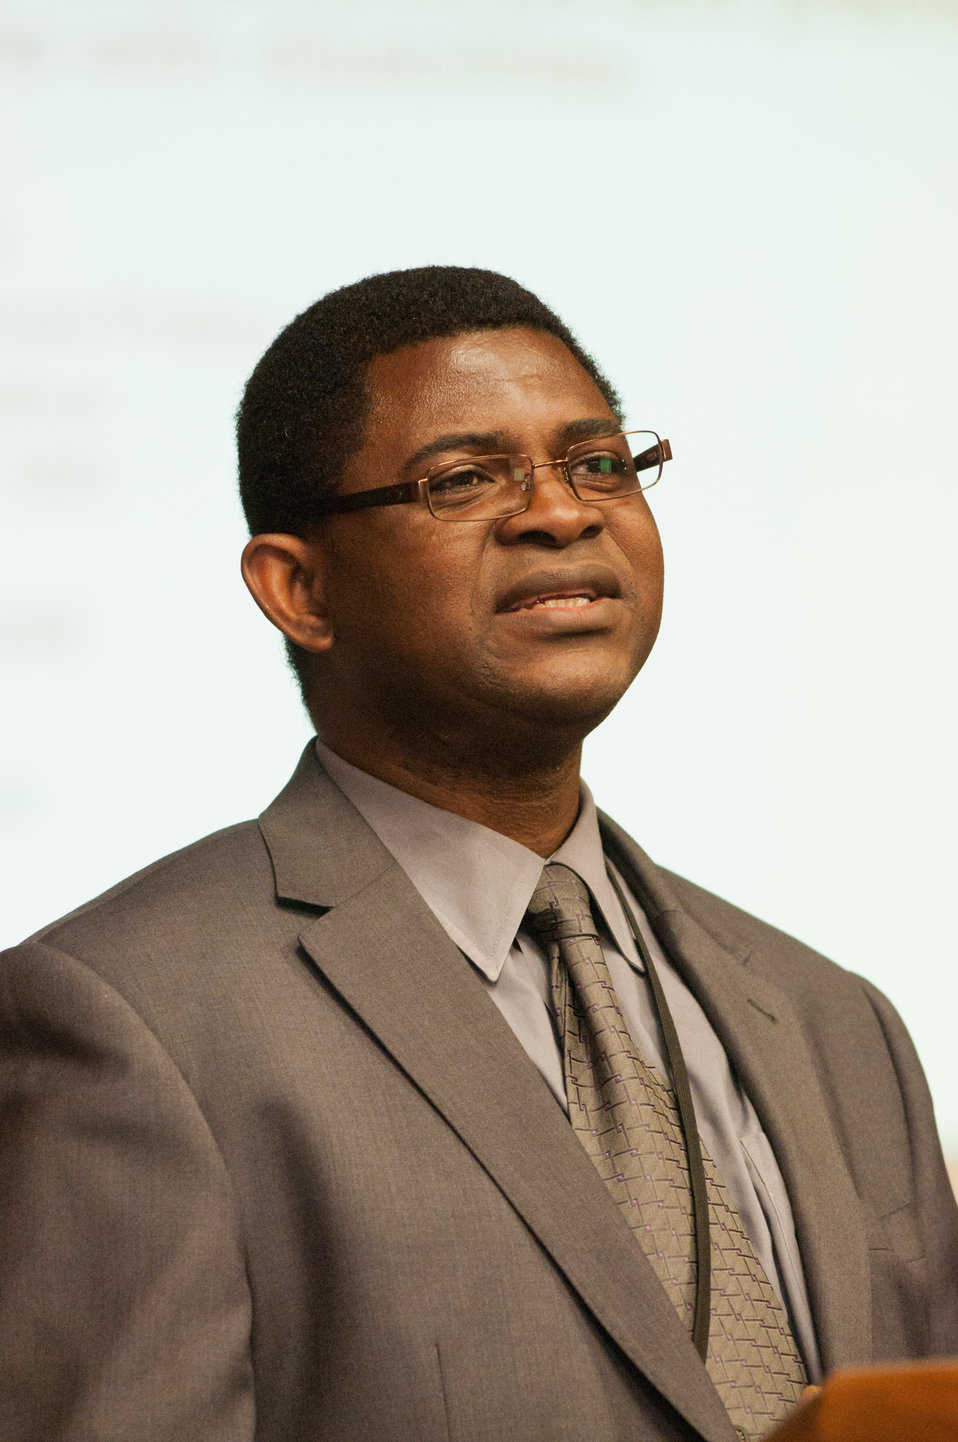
Department of Labor Office of Disability Employment Policy representative Akinyemi Banjo discusses Federal wide resources available to disability employment program managers at the U.S. Department of Agriculture (USDA) Office of Human Resources Management (OHRM) Disability Employment Program Team Training at USDA in Washington, D.C. on Tuesday, May14, 2013.